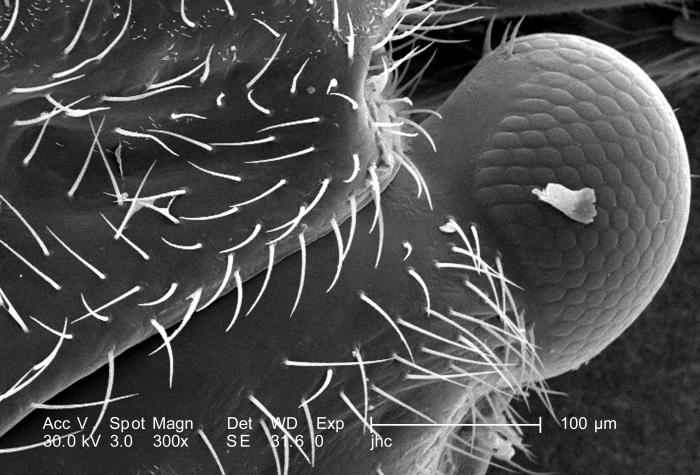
At the same magnification, i.e., 300X, as that of PHIL 9902, this scanning electron micrograph (SEM) depicted one of the two compound eyes of an unidentified 1/4"-sized black flying insect with a small red mark on its dorsum, found in the Decatur, Georgia suburbs.The compound eye is given this name due to the fact that the single large eye is really made up of many repeating units known as "ommatidia', each composed of separate units made up of a photoreceptor cell, support cell, and pigment cells. Though each of these visual mechanisms functions as a separate organ, together they provide the organism with a "compound' picture of its environment. Due to what is referred to as the "flicker effect', the compound eye is made very sensitive to movement, with each ommatidium turning on and off, as objects pass across its field of view. The bilateral anatomical placement of the insect's eyes provides the organism with a very wide range of visual sensitivity.